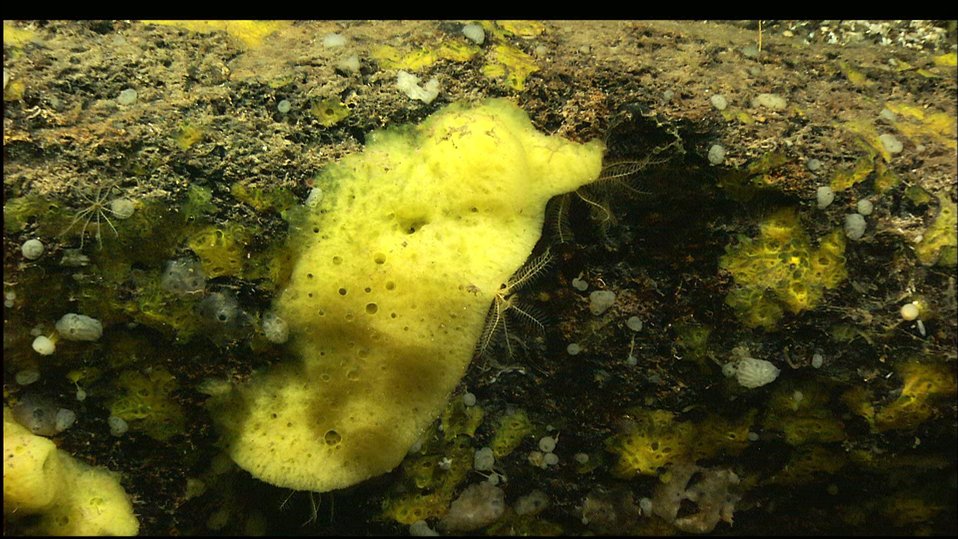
Lovely sponge community with crinoids on rock wall. Dive 14.